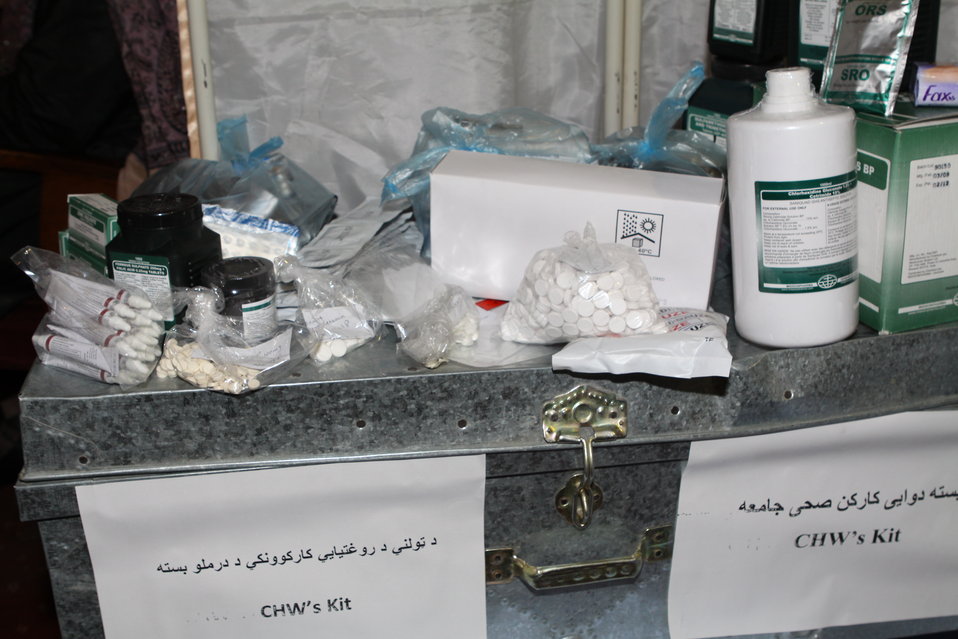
Community Health Workers Celebrated

Kabul, Afghanistan | December 5, 2010 — In support of the United Nations designated International Volunteer Day for Economic and Social Development, Afghanistan’s Ministry of Public Health celebrated its annual Community Health Worker Day today. Acting Minister of Public Health Dr. Suraya Dalil, USAID Senior Deputy Mission Director Robert Hellyer, other government officials, and international donors joined in recognizing the critical contribution of community health workers in Afghanistan and encouraging them to continue their voluntary support to their communities.
The event praised the contributions of the more than 22,000 volunteers throughout the country who deliver community level health-education, counseling, and services out of village health posts located in private homes. The Ministry of Public Health envisioned that community-based healthcare programs will actively encourage communities and families to adopt healthy lifestyles and behaviors, and provide families access to high quality and socially acceptable preventative medicine and life-saving services.
“We have 22,000 community health workers in Afghanistan that are able to implement the basic and standard medicines. They all have been trained through a job description,” said Minister Dalil. Addressing the health workers, she added, “I am proud and feel powerful that I have people like you.”
USAID-funded health projects collaborate closely with the Ministry of Public Health to improve the health and nutritional status of Afghans, provide quality primary healthcare, and promote healthy behaviors at the community and household-levels. USAID supported the training of more than 9,000 of the volunteer community health workers currently working in Afghanistan.
“On behalf of the American people, I congratulate the Community Health Workers for their diligence to gain the skills and knowledge necessary to serve their communities in this important role,” said USAID Senior Deputy Mission Director Hellyer. “USAID strongly supports community based health care and believes that quality community-based health services are essential to reaching Afghanistan’s Millennium Development Goals.”
To support the Basic Package of Health Services, USAID assisted in developing the community health worker training manual, helped train community health worker supervisors and master-trainers, facilitated in-service training, and produced and developed reporting tools, job aids, and education materials.